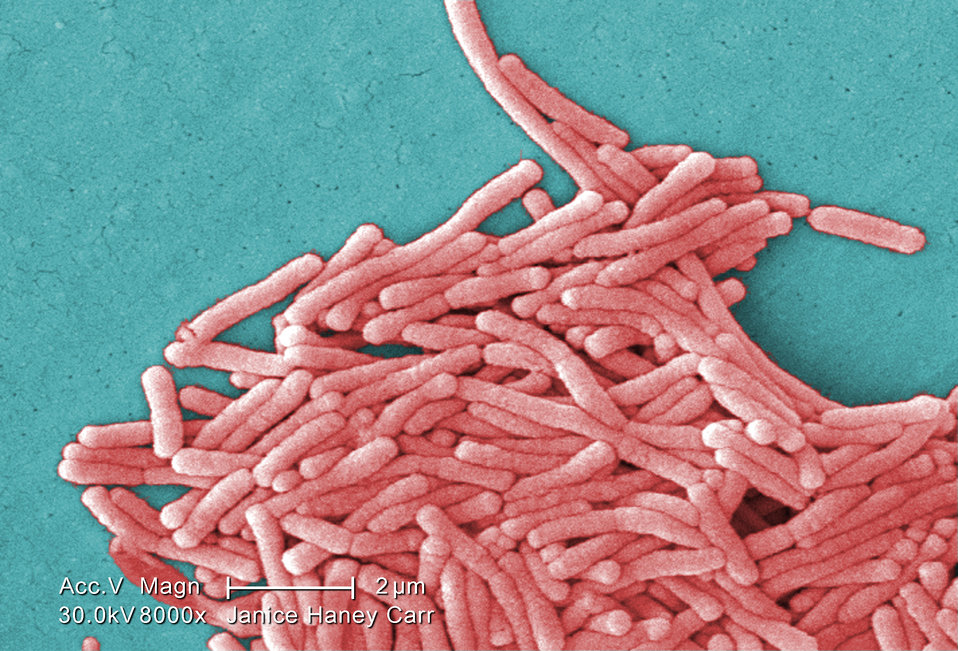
Under a moderately-high magnification of 8000X, this colorized scanning electron micrograph (SEM) depicted a large grouping of Gram-negative Legionella pneumophila bacteria. Please see PHIL 11092 through 11152 for additional SEMs of these organisms, specifically PHIL 11149 for a black and white version of this image. Of particular importance, is the presence of polar flagella, and pili, or long streamers, which due to their fragile nature, in some of these views seem to be dissociated from any of the bacteria.